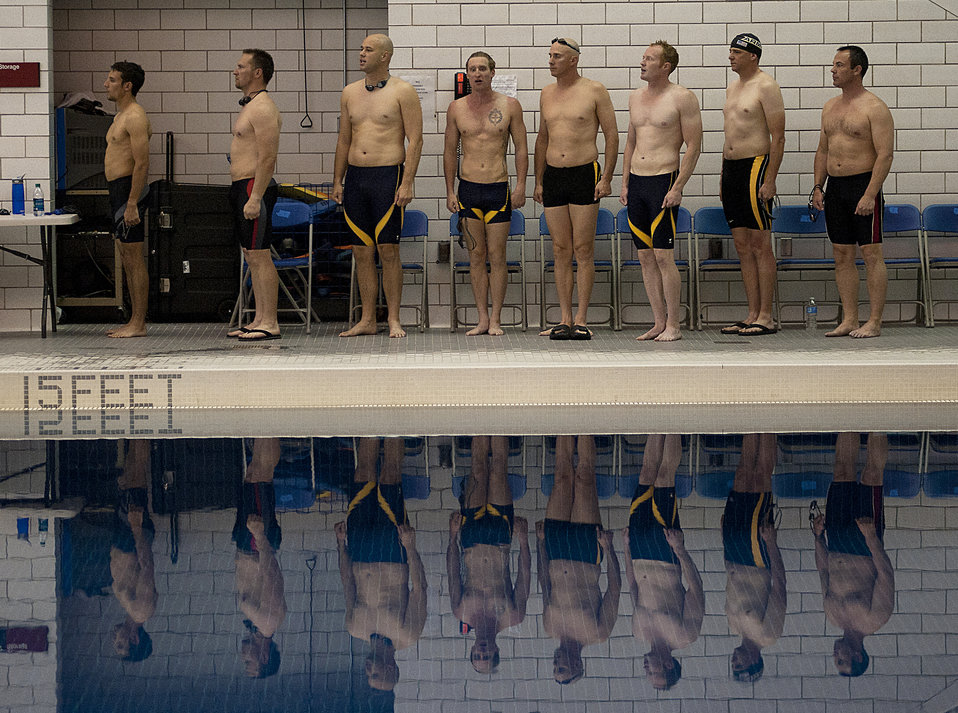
Warrior Games

U.S. Air Force Tech. Sgt. Marc Esposito, far left, and other athletes stand at attention during a medal ceremony of the swimming competitions of Warrior Games 2012 at the U.S. Air Force Academy in Colorado Springs, Colo., May 5, 2012. Esposito is with the Special Operations Command team.